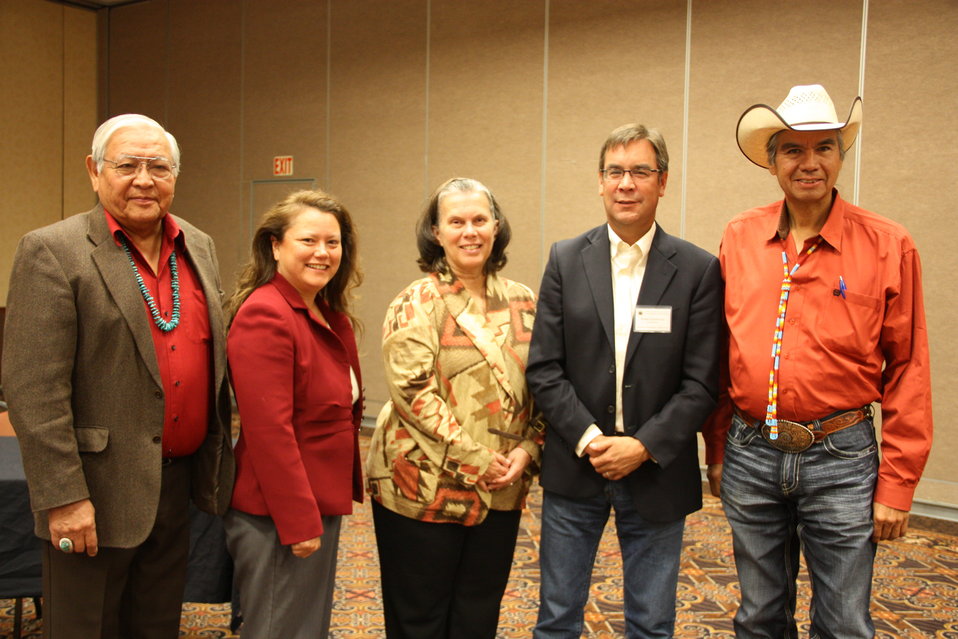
U.S. Department of Agriculture (USDA) Senior Advisor to the Secretary for Tribal Relations Janie Hipp meets with the Commission on Indian Trust Administration and Reform members at the United Tribes Tribal Leaders Summit in Bismarck, ND on Sept. 13, 2012. (L to R Dr. Peterson Zah, Fawn Sharp, Janie Hipp, Robert Anderson, and Commissioner Tribal Chairman, Three Affiliated Tribes, North Dakota Tex Hall). Hipp discussed the importance of the recently created the Council for Native American Farming and Ranching. Council members were selected by Agriculture Secretary Tom Vilsack to suggest changes to USDA regulations and to provide internal guidance or propose measures that would promote the participation of American Indian farmers and ranchers in USDA programs and support government-to-government relations between USDA and tribal governments.